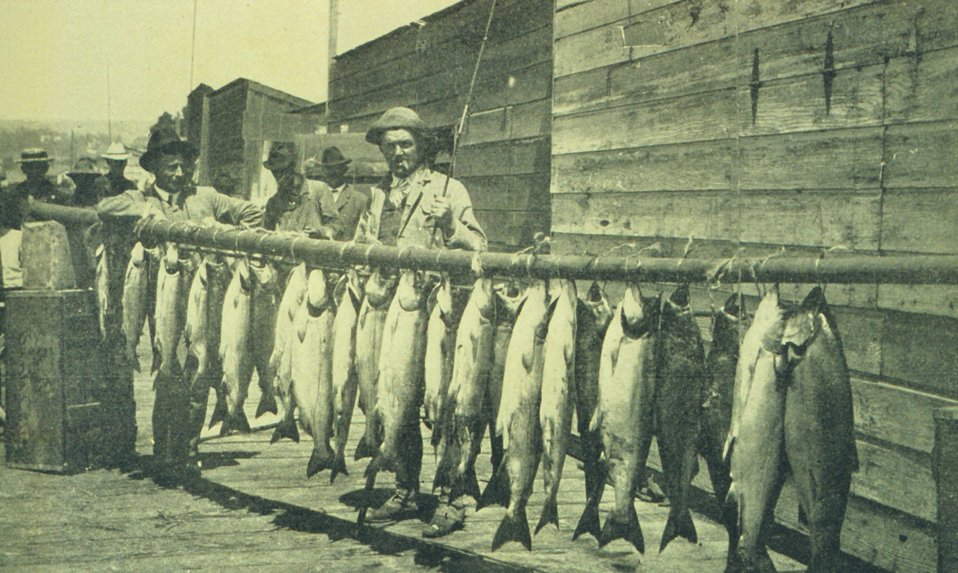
Salmon catch with rod and reel at Santa Cruz. In: 'The City of Santa Cruz and VicinityCalifornia.' Published by The Santa Cruz Board of Trade. 1905.